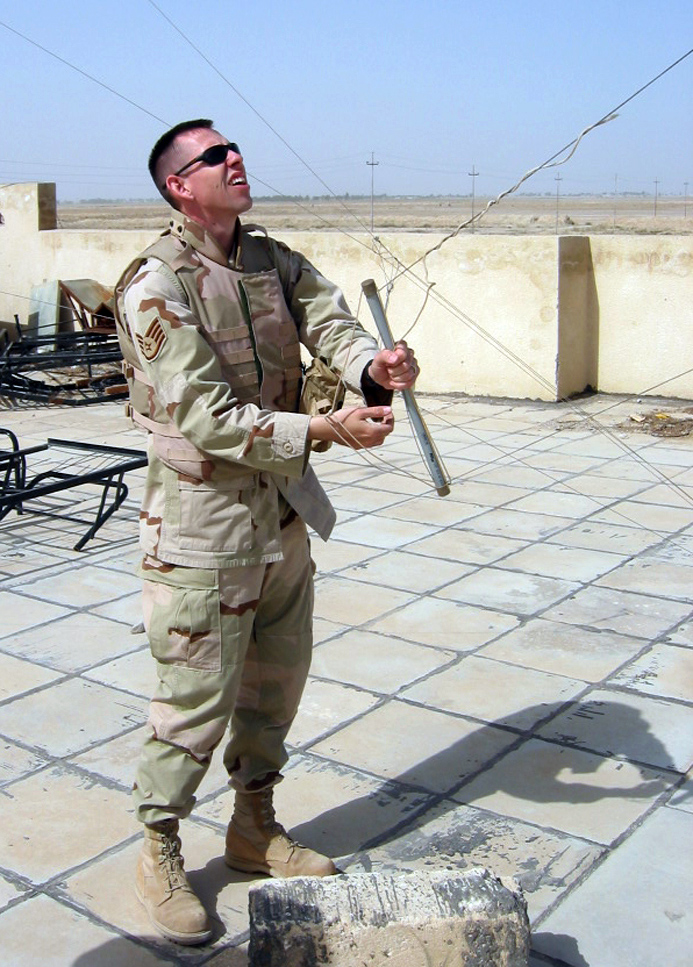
Maintainers repair Iraqi police station radio

Staff Sgt. Chris Birdwell adjusts a high frequency antenna on top of an Iraqi police station. He is assigned to the 407th Expeditionary Communications Squadron.